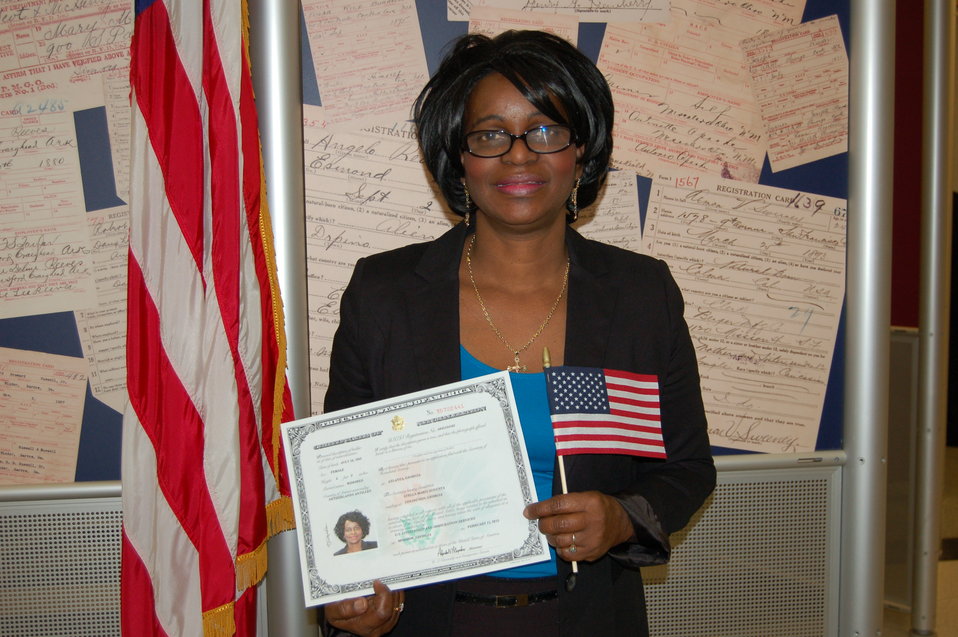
New Citizens